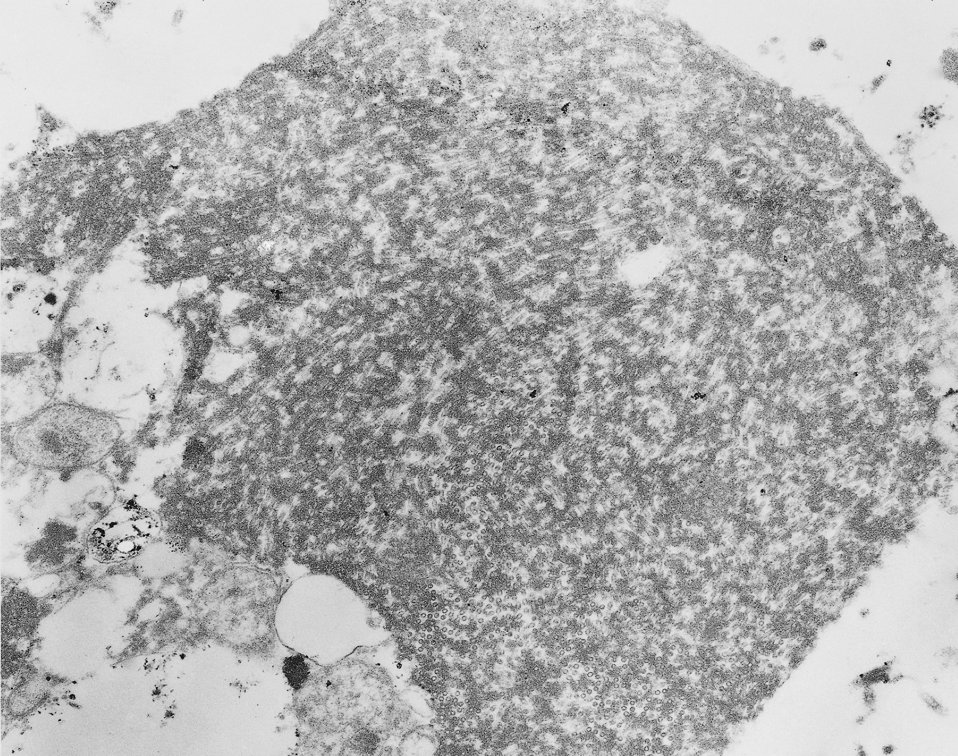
This electron micrograph shows a thin section containing the Ebola virus, the causative agent for African Hemorrhagic Fever.